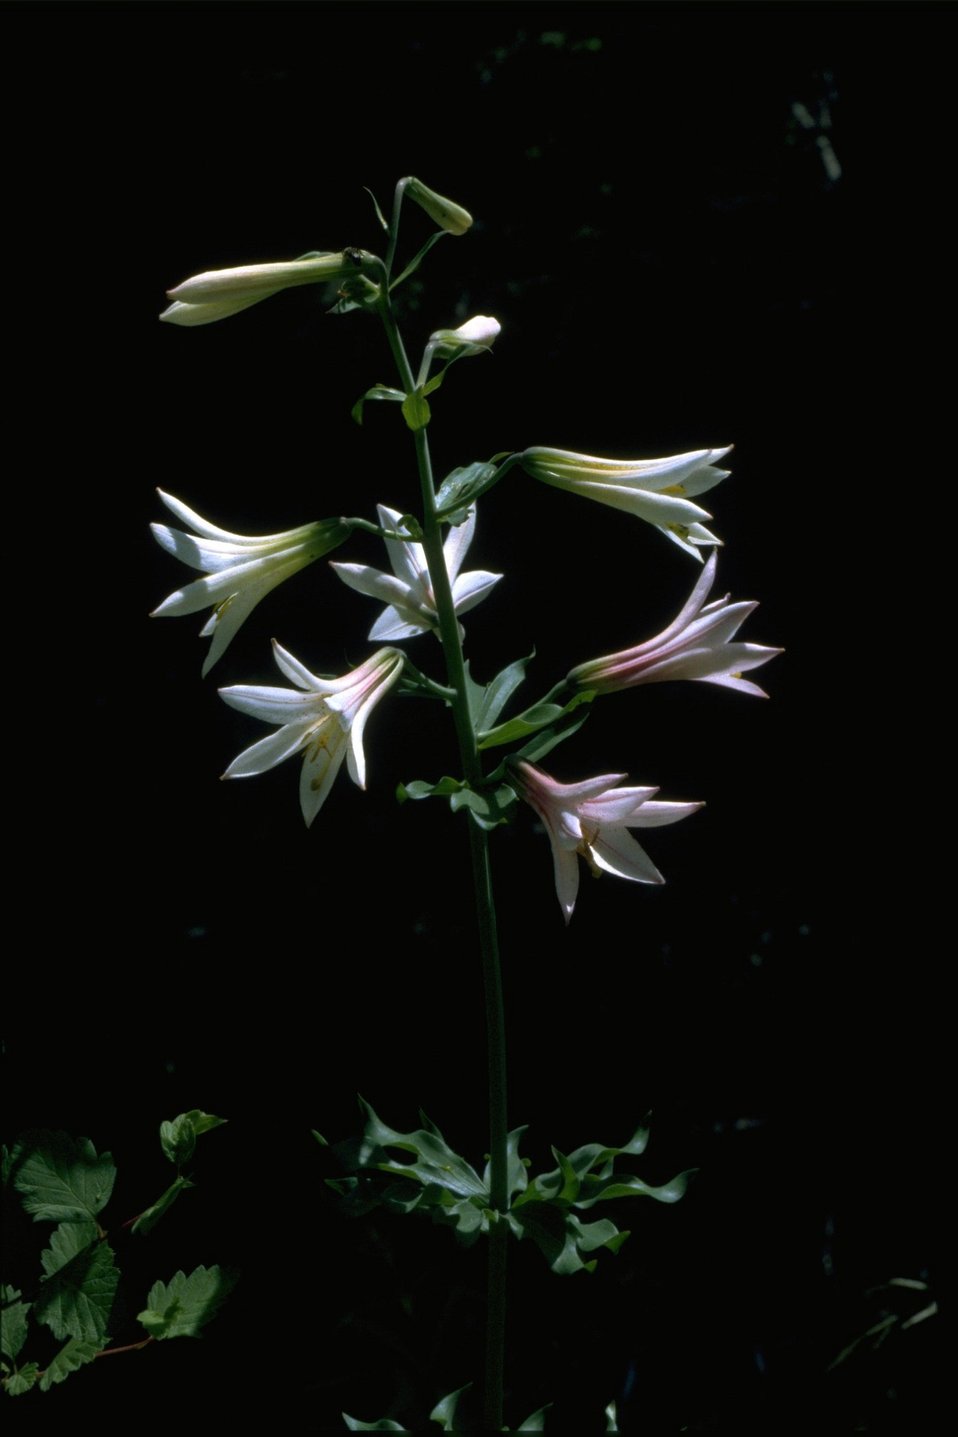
Medium shot of Lilium washingtonianum.